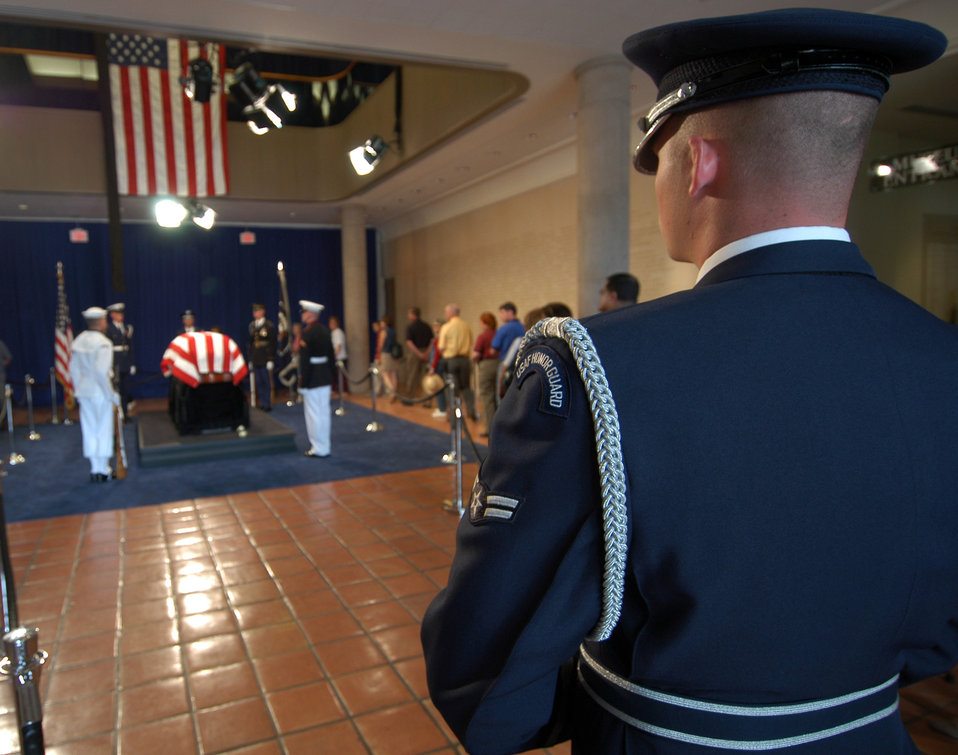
Paying respect

SIMI VALLEY, Calif. -- An Airman assigned to the U.S. Air Force Honor Guard at Bolling Air Force Base, D.C., stands watch as people pay their respects to former President Ronald Reagan at the Ronald Reagan Presidential Library here. A state funeral takes place June 11 for President Reagan who died June 5.